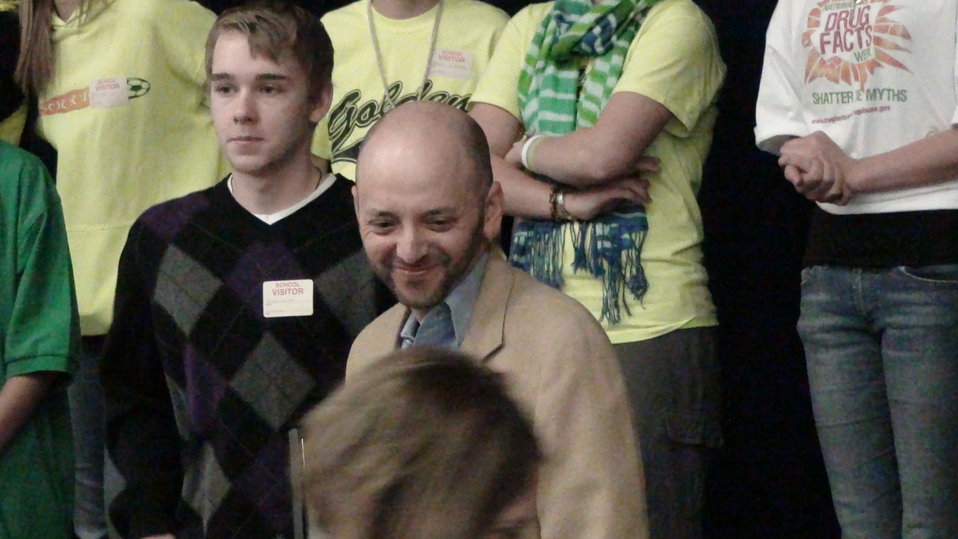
Golden High School NDFW Event

Golden Colorado, Mayor Jacob Smith Presenting the NDFW proclamation to the students at Bell Middle School, Golden, CO.